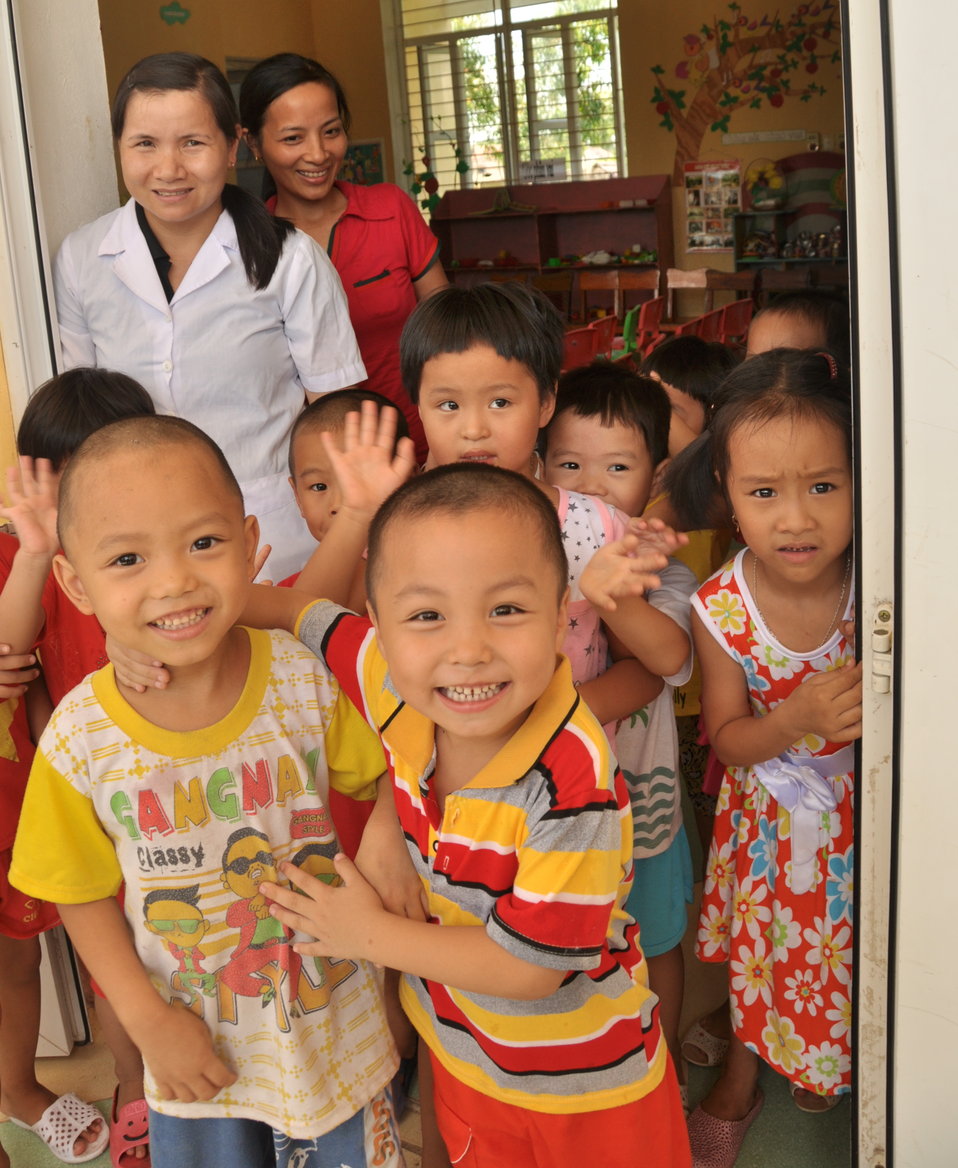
USAID Delivers Deworming Medication to Kindergartners in Nam Dinh Province

Children of Vietnam's Nam Dinh Province receive deworming medicine in a program supported by USAID and World Vision Australia.
June 1, 2013